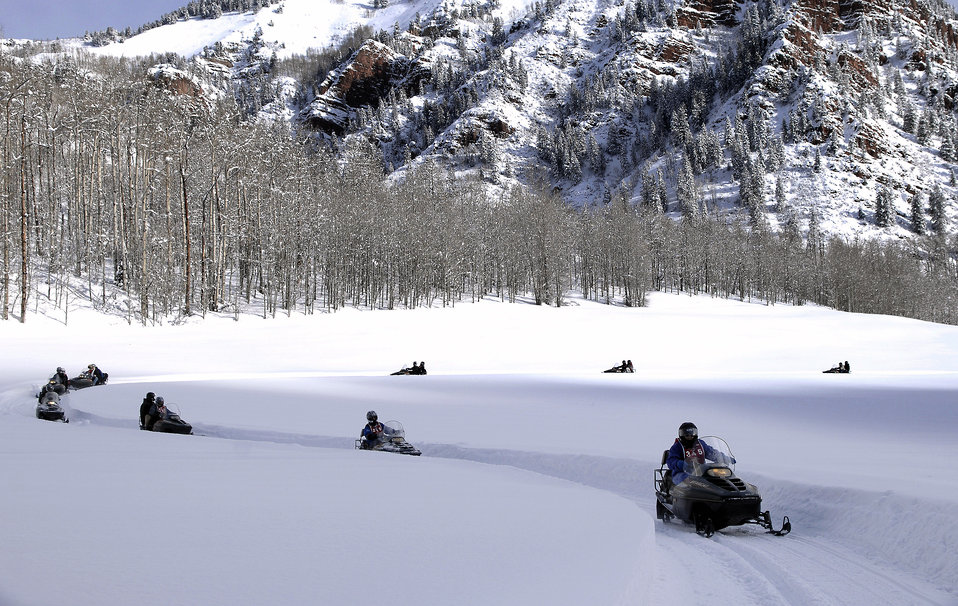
Winter sports clinic helps veterans

Several disabled veterans snowmobile under careful supervision during the 22nd National Disabled Veterans Winter Sports Clinic held at the Snowmass Village, Colo., April 2. The annual disabled learn-to-ski clinic helps motivate and rehabilitate disabled Department of Defense veterans. It is the largest of its kind in the world. The clinic instructs veterans on Alpine and Nordic skiing, rock climbing, snowmobiling, sled hockey, and more.